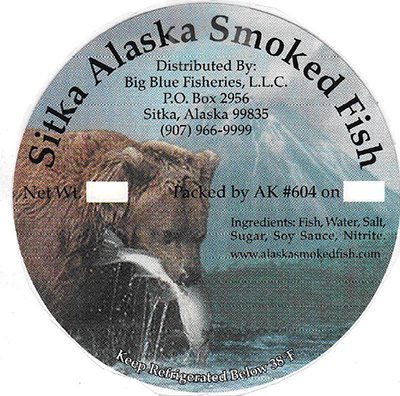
RECALLED – Salmon, Cod

September 30, 2013 – Product Recall – Big Blue Fisheries, Llc Recalls All Smoked Products From All Lots, Various Sizes, in Vacuum Packaging Because of Possible Health Risk.